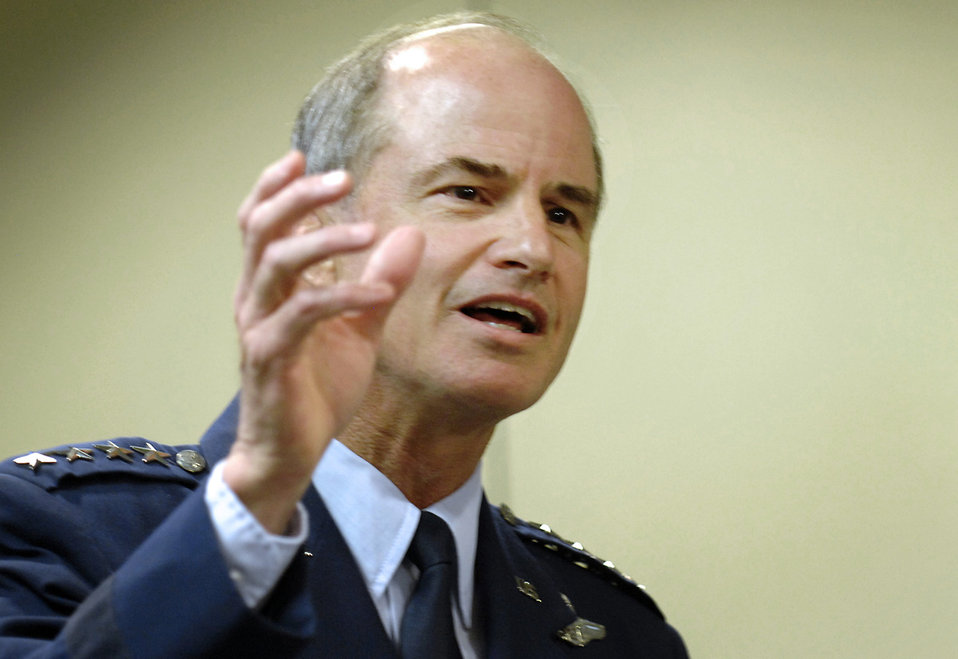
Cyber Command

Gen. Kevin P. Chilton delivers remarks at the deactivation ceremony of the Joint Task Force Global Networks Operation Sept. 7, 2010, in Arlington, Va. The task force is the Defense Department's lead effort in cyber defense. Its mission and personnel now fall under the U.S. Cyber Command at Fort Meade, Md. General Chilton is the U.S. Strategic Command commander.